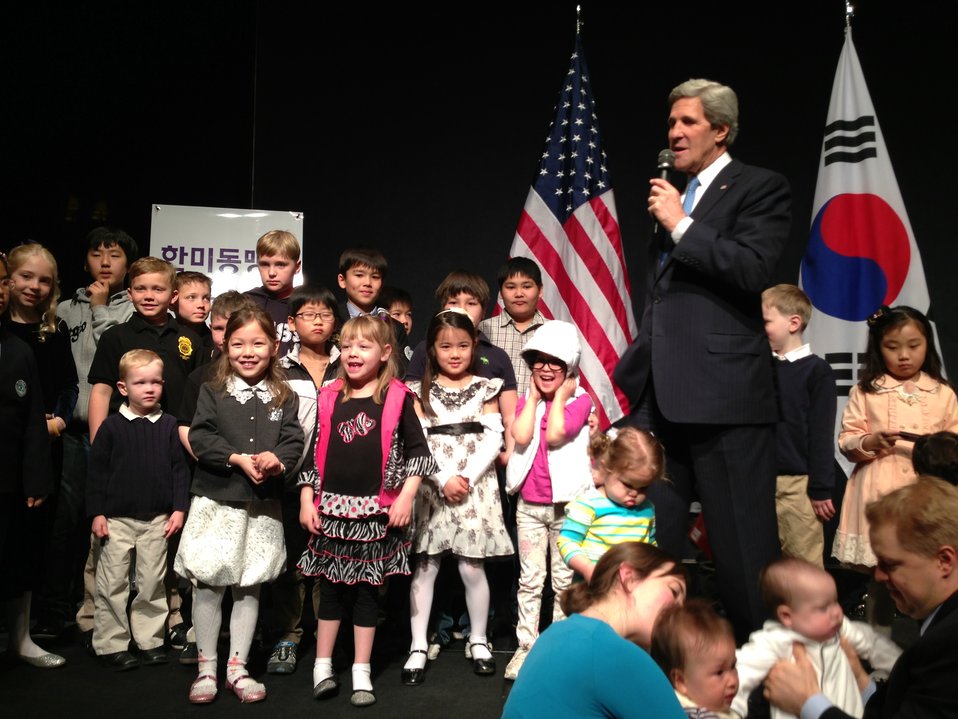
Secretary Kerry with Children of U.S. Embassy Seoul Staff Members

U.S. Secretary of State John Kerry shares the stage with children of U.S. Embassy staff members during a meet-and-greet event in Seoul, South Korea, on April 13, 2013.